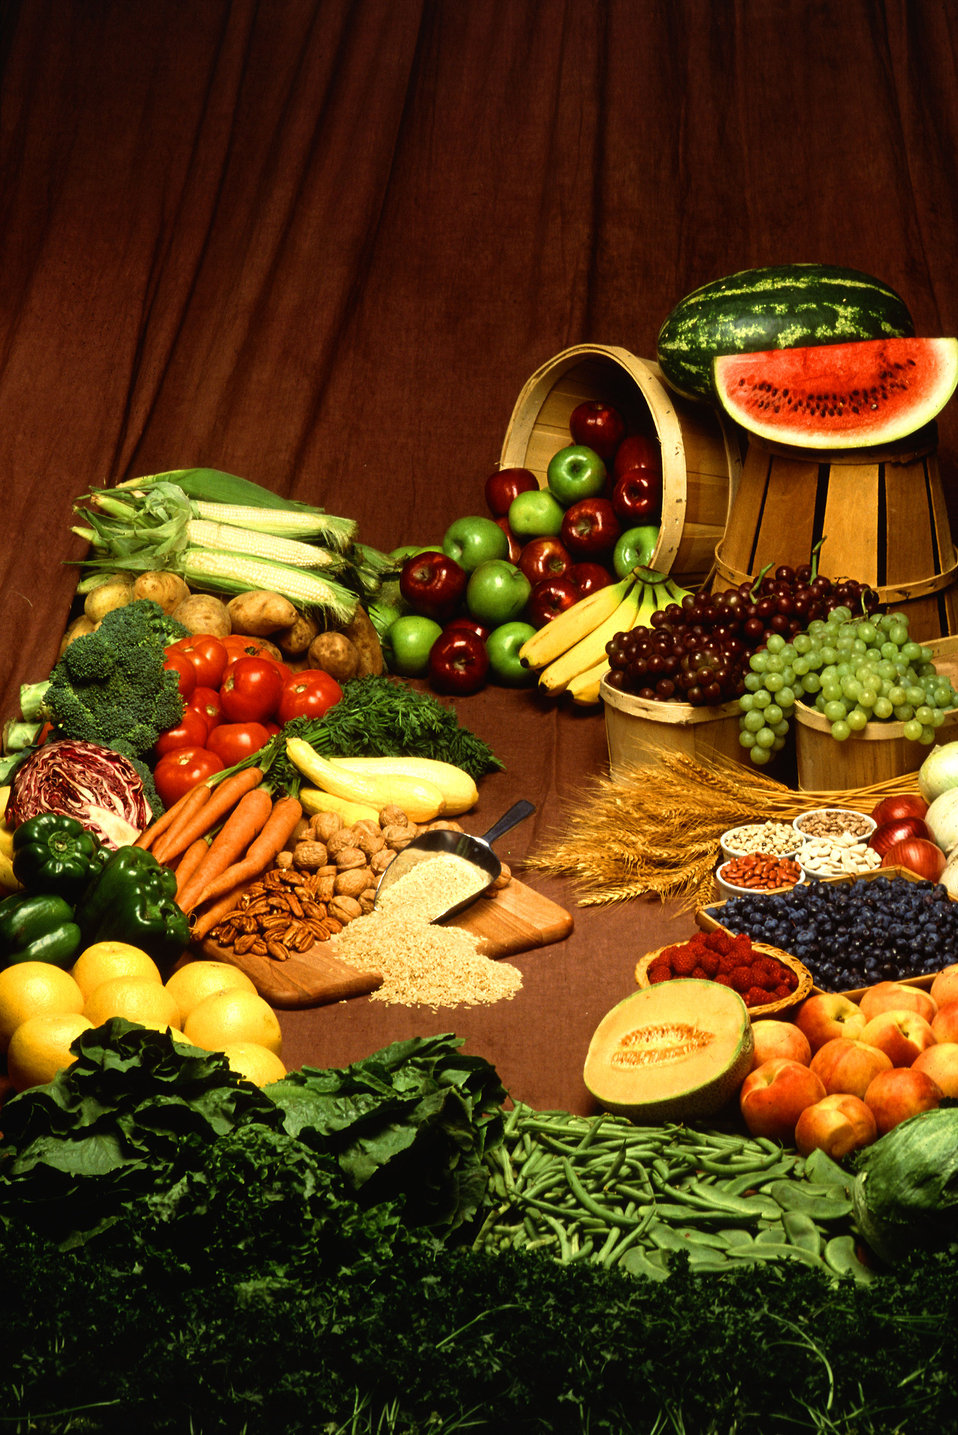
The fiber in complex carbohydrates-grain, fruit, and vegetables can reduce the body's absorption of fructose, even from fruit which is naturally high in the sugar.